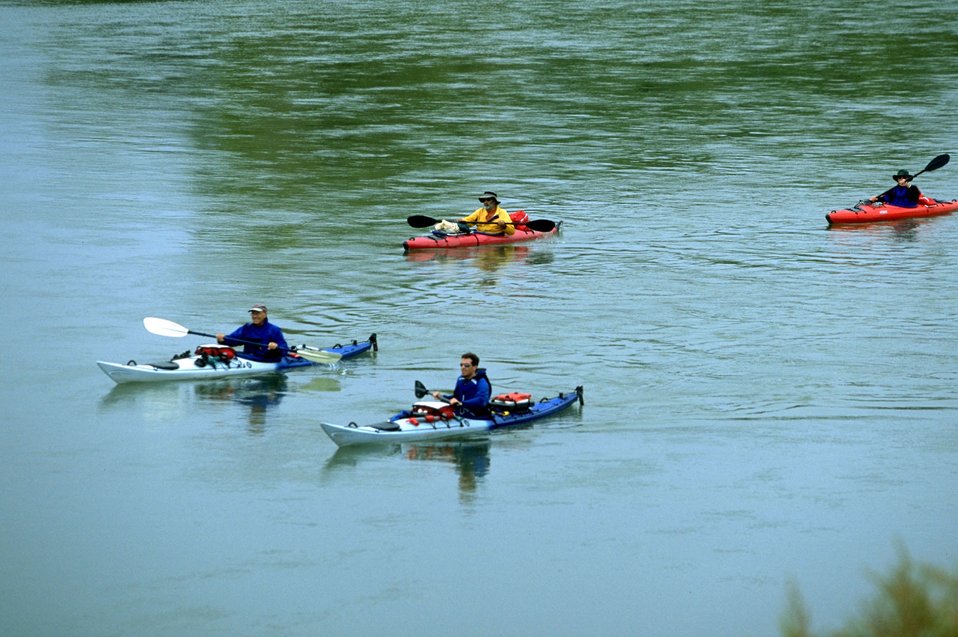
Floaters on Missouri River